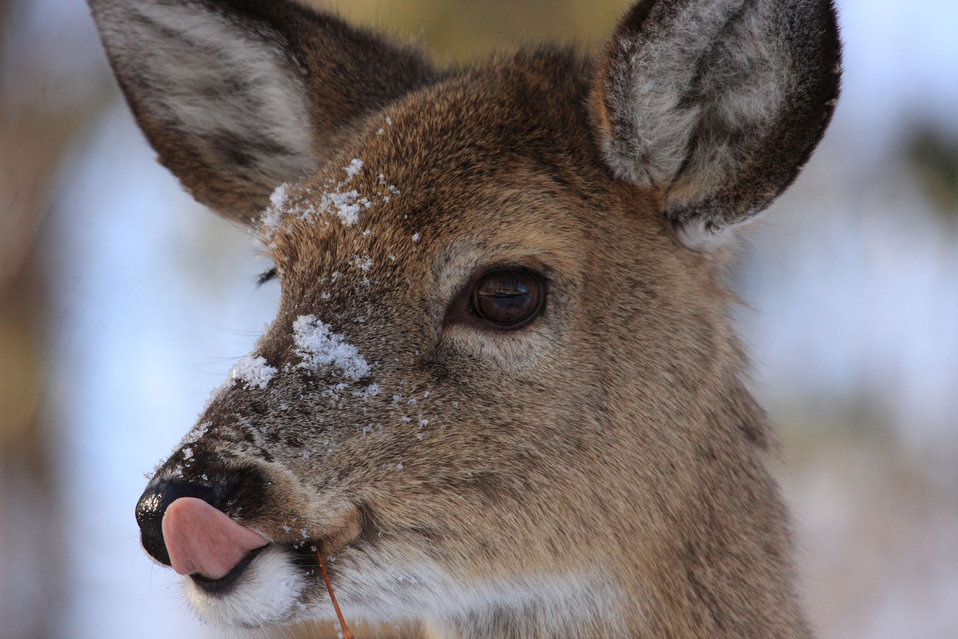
deer eats snow

John Heinz National Wildlife Refuge, PA